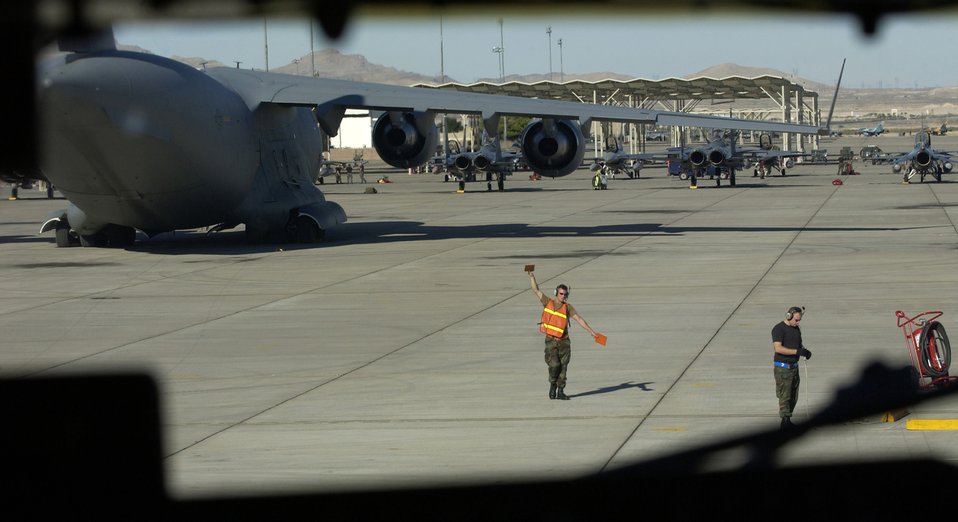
Airmen hone skills at Red Flag

Airmen marshal in a KC-135 Stratotanker Oct. 19 during Red Flag 07-1 at Nellis Air Force Base, Nev.